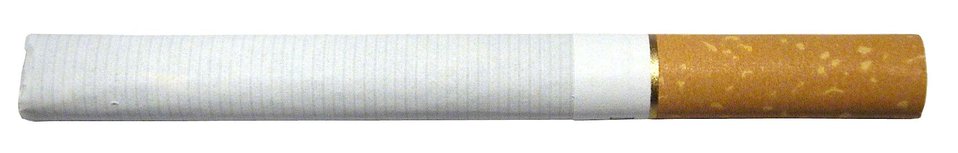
English:
Image title: Cigarette Image from Public domain images website, http://www.public-domain-image.com/full-image/objects-public-domain-images-pictures/cigarettes-public-domain-images-pictures/cigarette.jpg.html